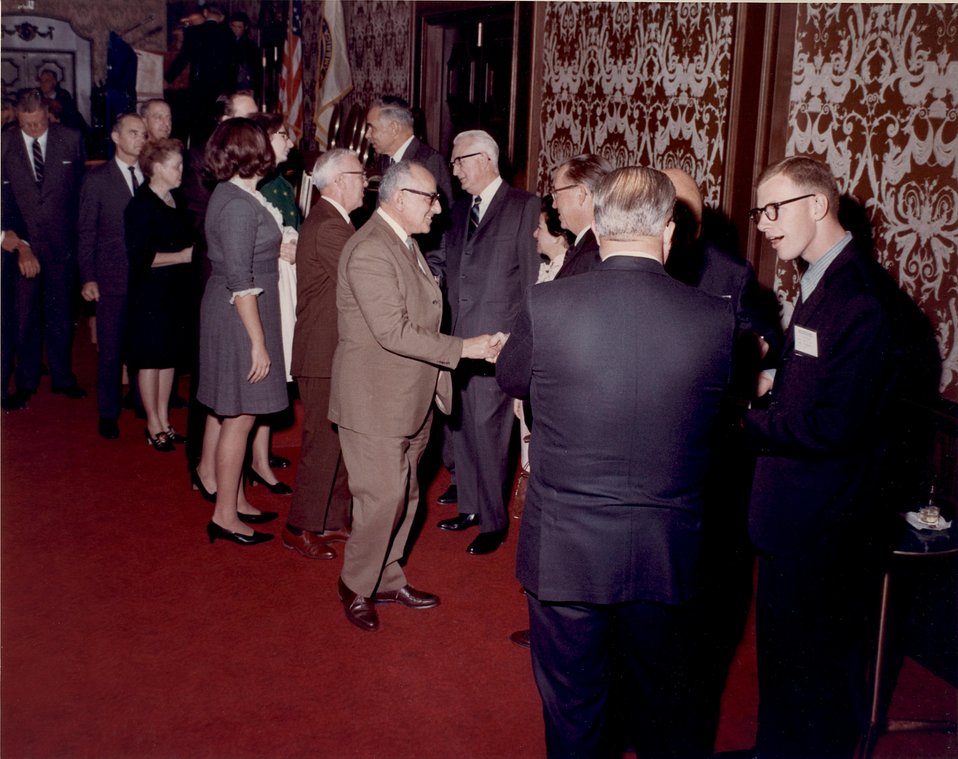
Enrico Fermi Award Ceremony. Imperial Ballroom. San Fransisco Hilton Hotel. 5:30 p.m., December 2, 1969. Fermi Award. Recipient: Walter Zinn. Date: Dec. 2, 1970.